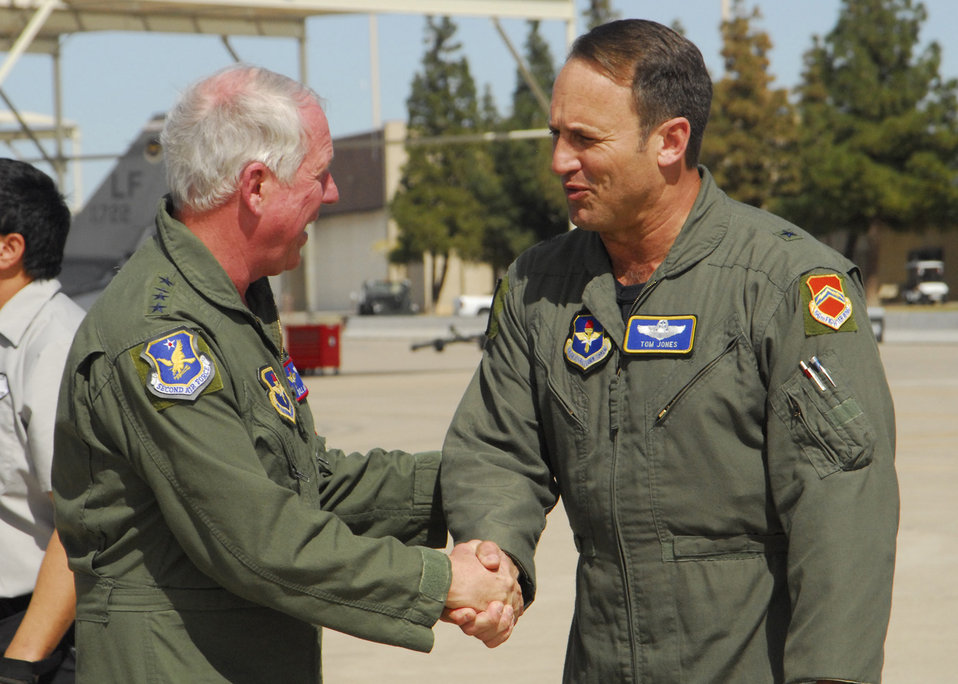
AETC commanders meet, discuss way ahead

Brig. Gen Tom Jones (right) welcomes Gen. William R. Looney III to Luke Air Force Base, Ariz., Feb. 25. General Looney, the commander of Air Education and Training Command, and other leaders were at Luke AFB for the AETC commanders' and command chiefs' conference. General Jones is the 56th Fighter Wing commander.